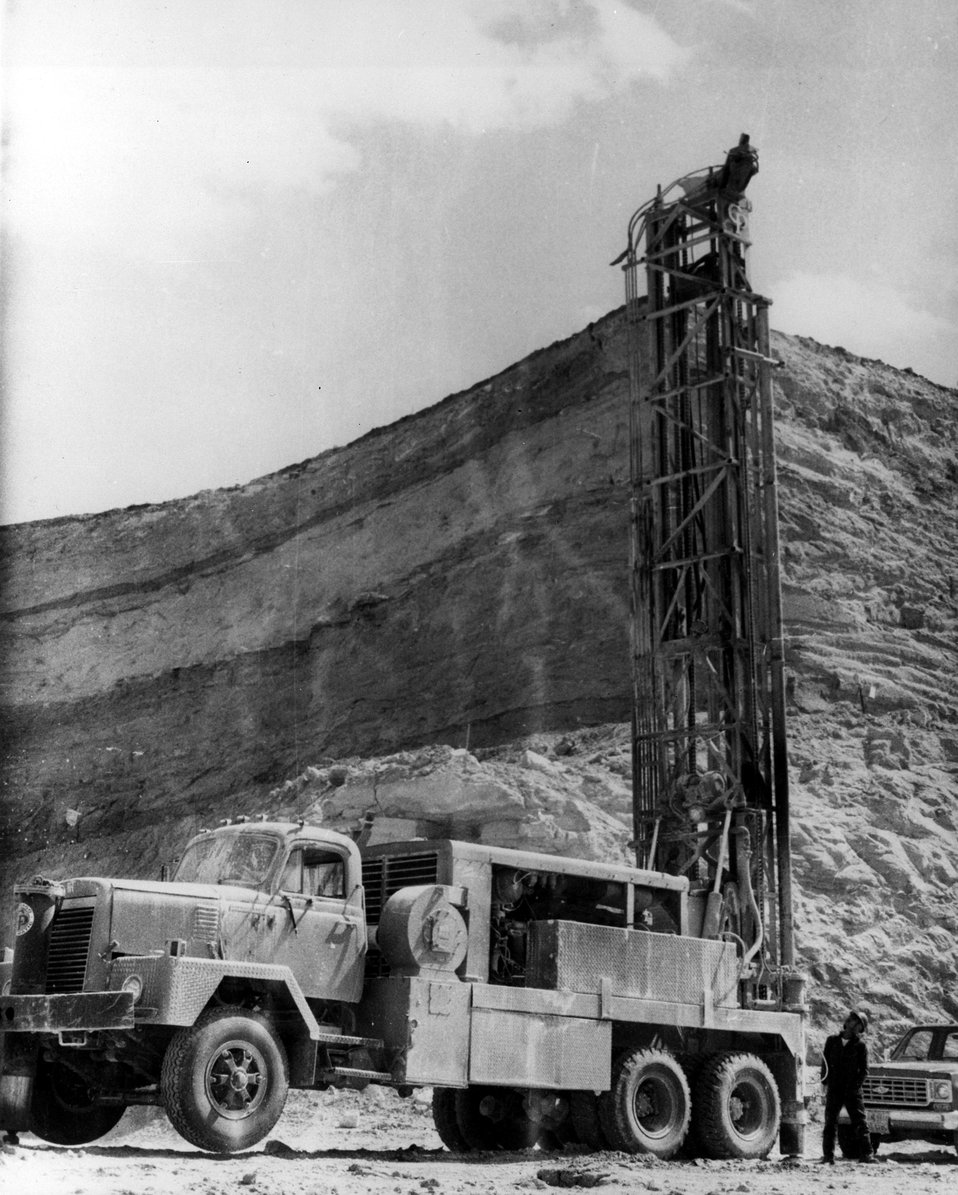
Royce Rodeman, driller for Fisher Drilling Inc. of Riverton, Wyoming pictured with the newest innovation in blast drilling the 670 Chicago Pneumatic Drill. The rig is being used in uranium drilling for the first time having previously been utilized in coal exploration. c. 1976